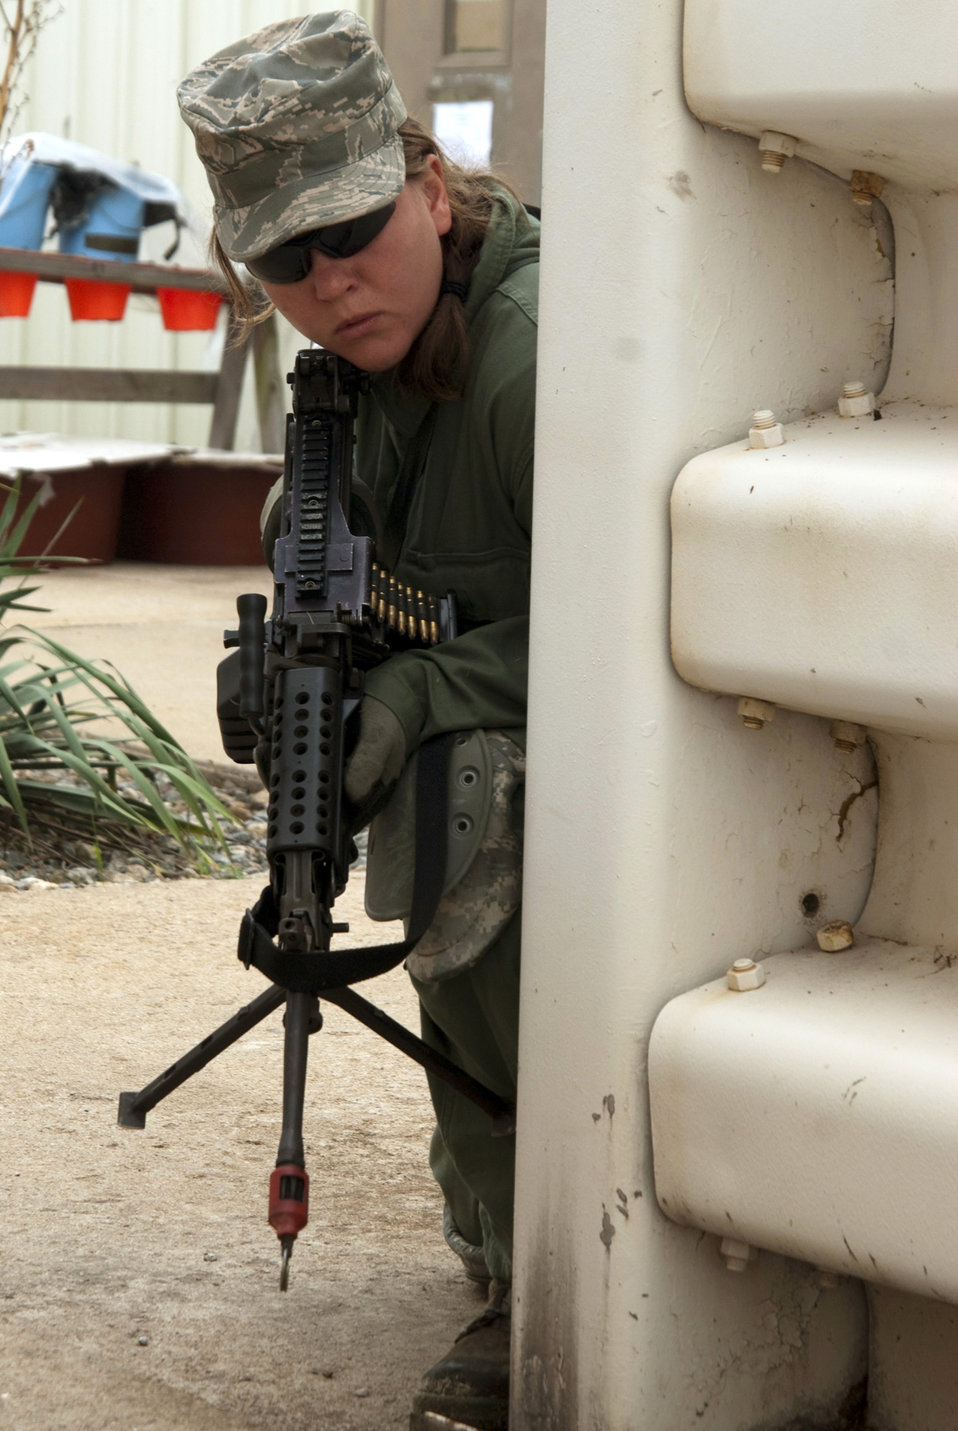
Kunsan Airmen test their skills

An